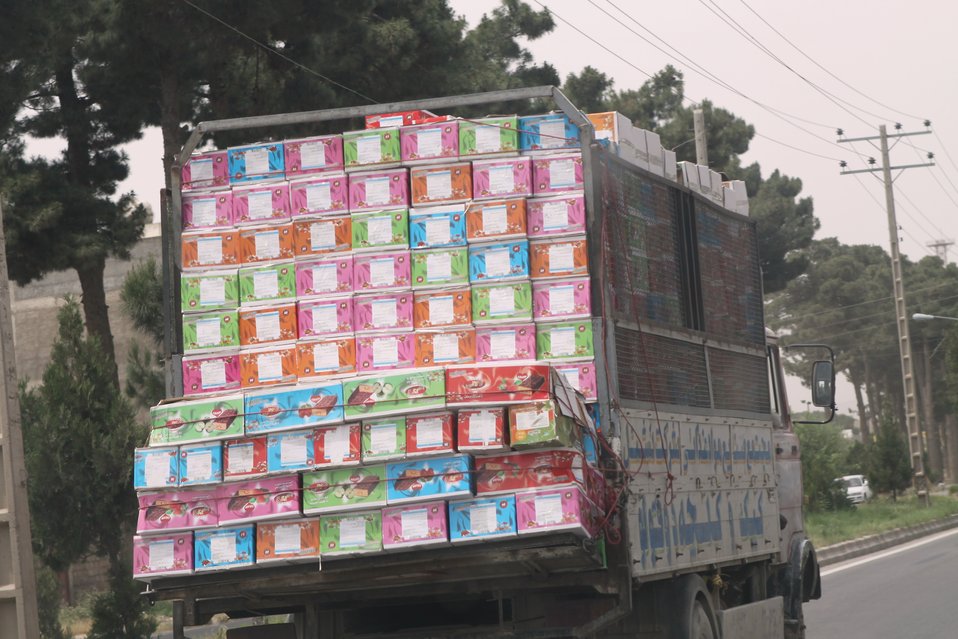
100525 Hirat Marble Conference 572